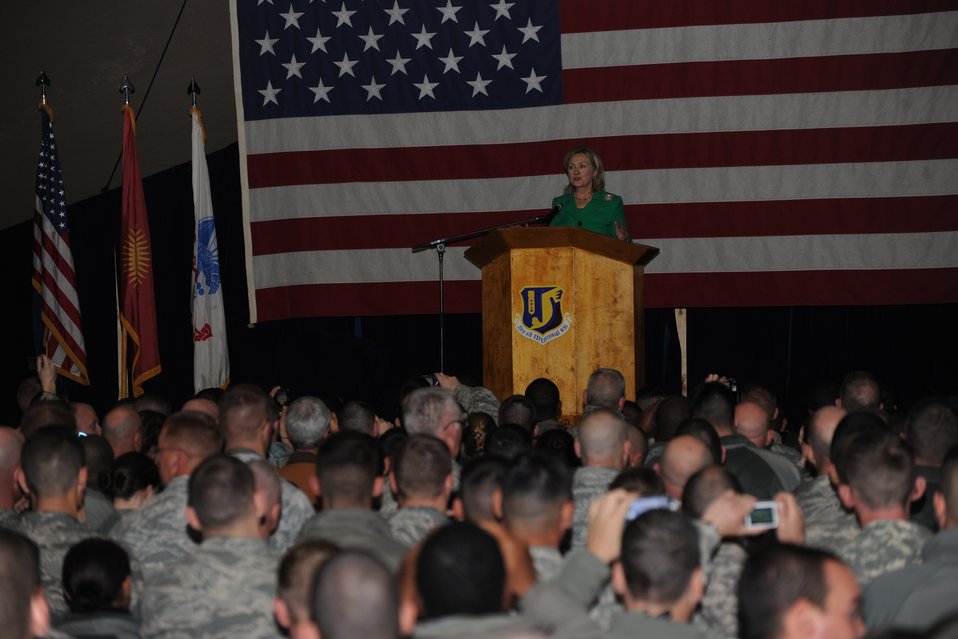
Secretary Clinton Speaks With U.S. Troops

U.S. Secretary of State Hillary Rodham Clinton speaks with U.S. troops at the Manas Transit Center in Kyrgyzstan on December 2, 2010.